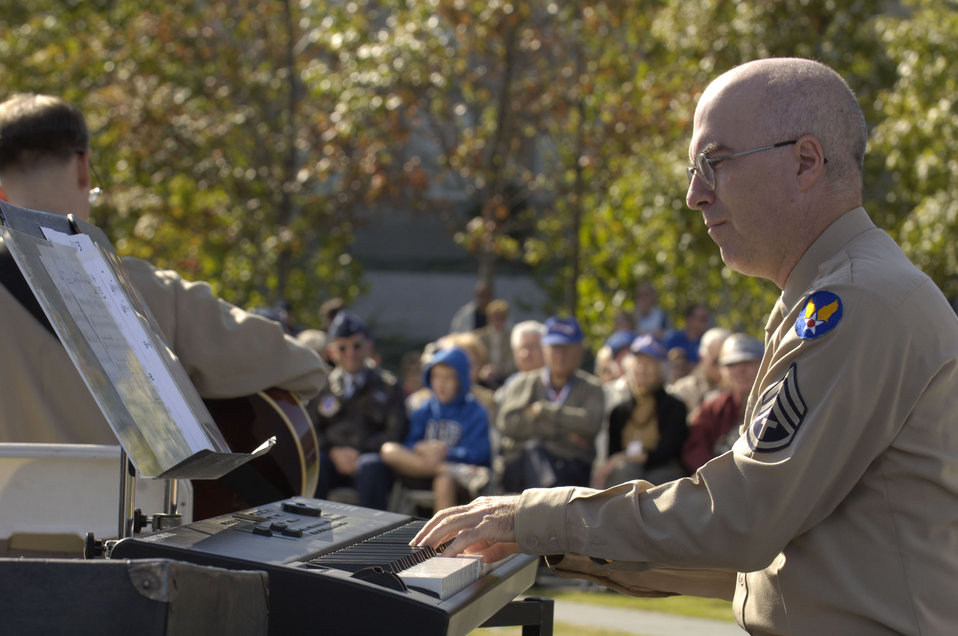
Airmen of Note at memorial

Master Sgt. Steven Erickson plays the keyboard during a concert by the U.S. Air Force Band's Airmen of Note held at the new Air Force Memorial in Arlington, Va., Oct. 21. This was the band's first official concert at the new memorial.